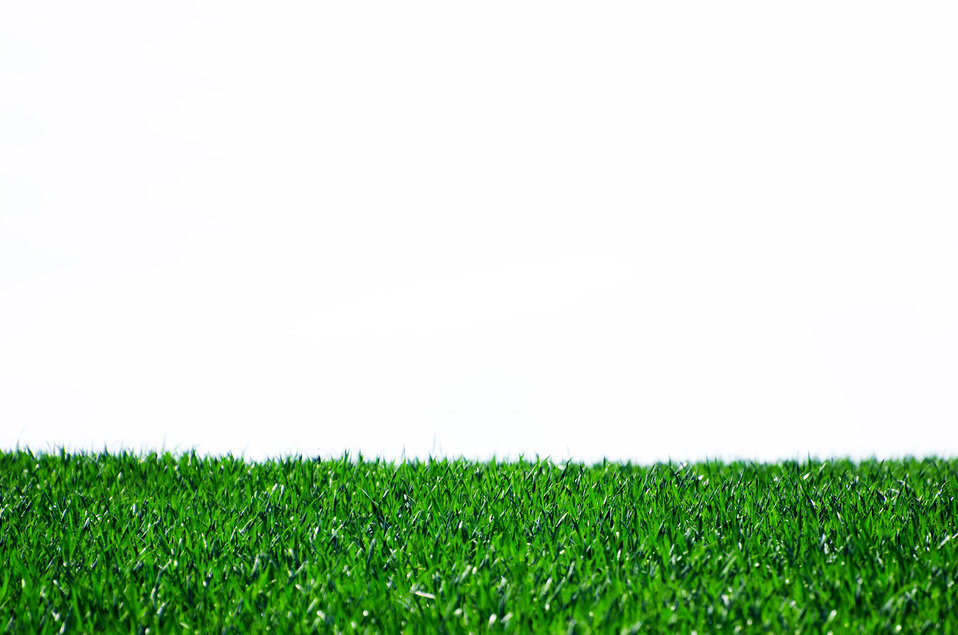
Grass and white background.